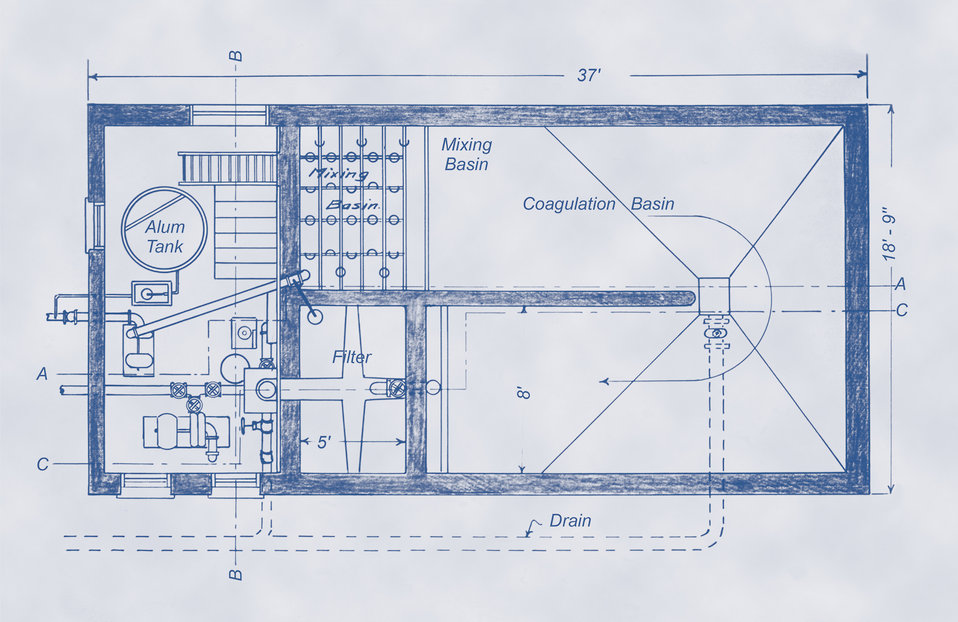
This historic 1922 diagram depicted details for a small municipal water filtration plant, revealing the general arrangement of the specific treatment units including an alum tank, filter, and coagulation basin. Other views of this filtration plant can be seen in PHIL 8646, 8647, 8648, 8649 images.